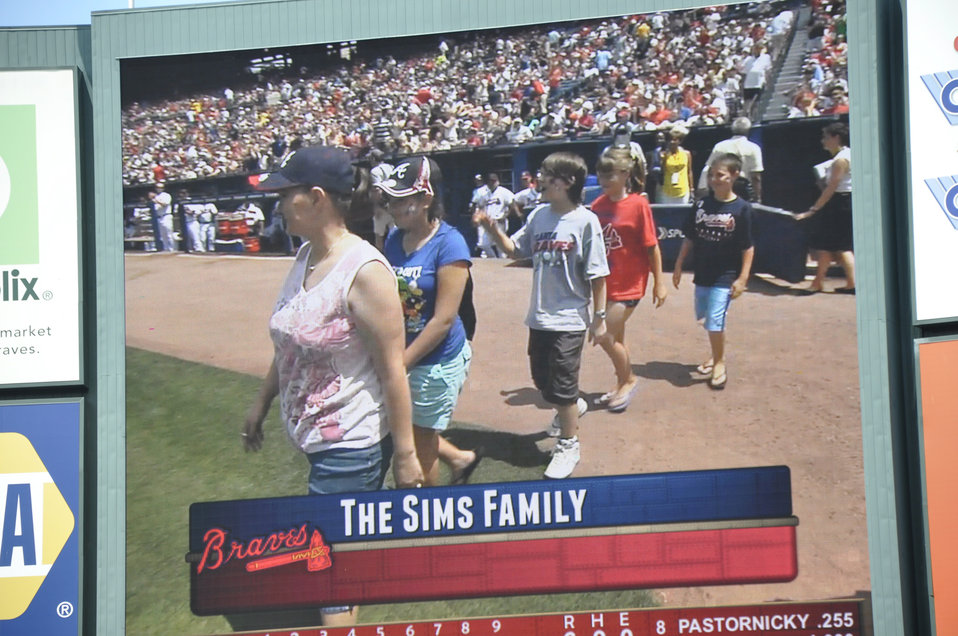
Airman has 'Memorial' reunion during Braves game

Master Sgt. David Sims' wife and children are featured on the big screen as the Atlanta Braves’ Hometown Heroes, representing all military families with loved ones serving overseas. His wife Robin and children BreAnna, Brittany, Dustin and Roman were moments away from a big surprise, as Sims was hiding on the other side of the dugout.